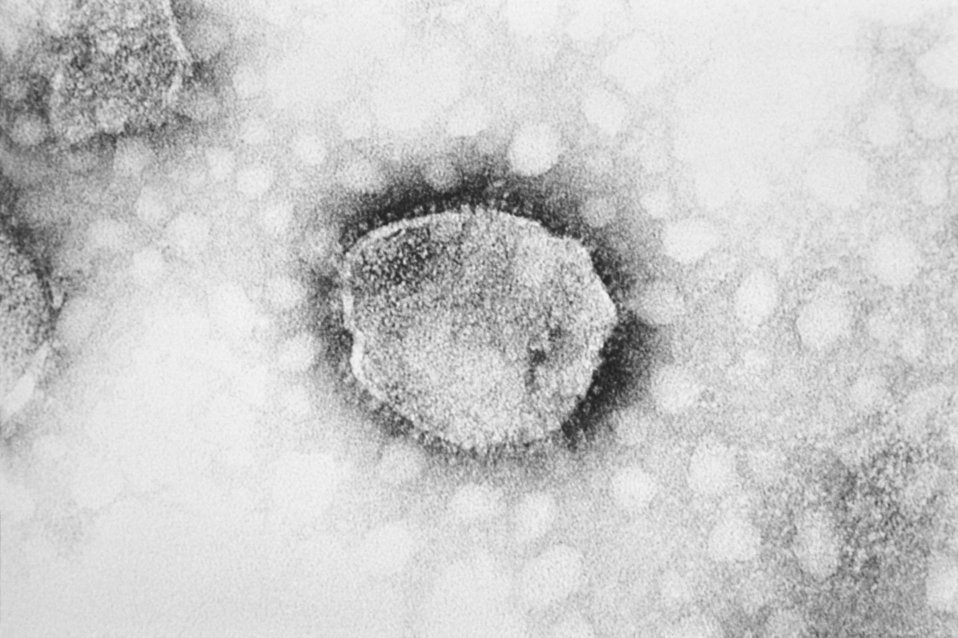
Electron micrograph of Arenaviridae - Tacaribe complex (New world arenaviruses)